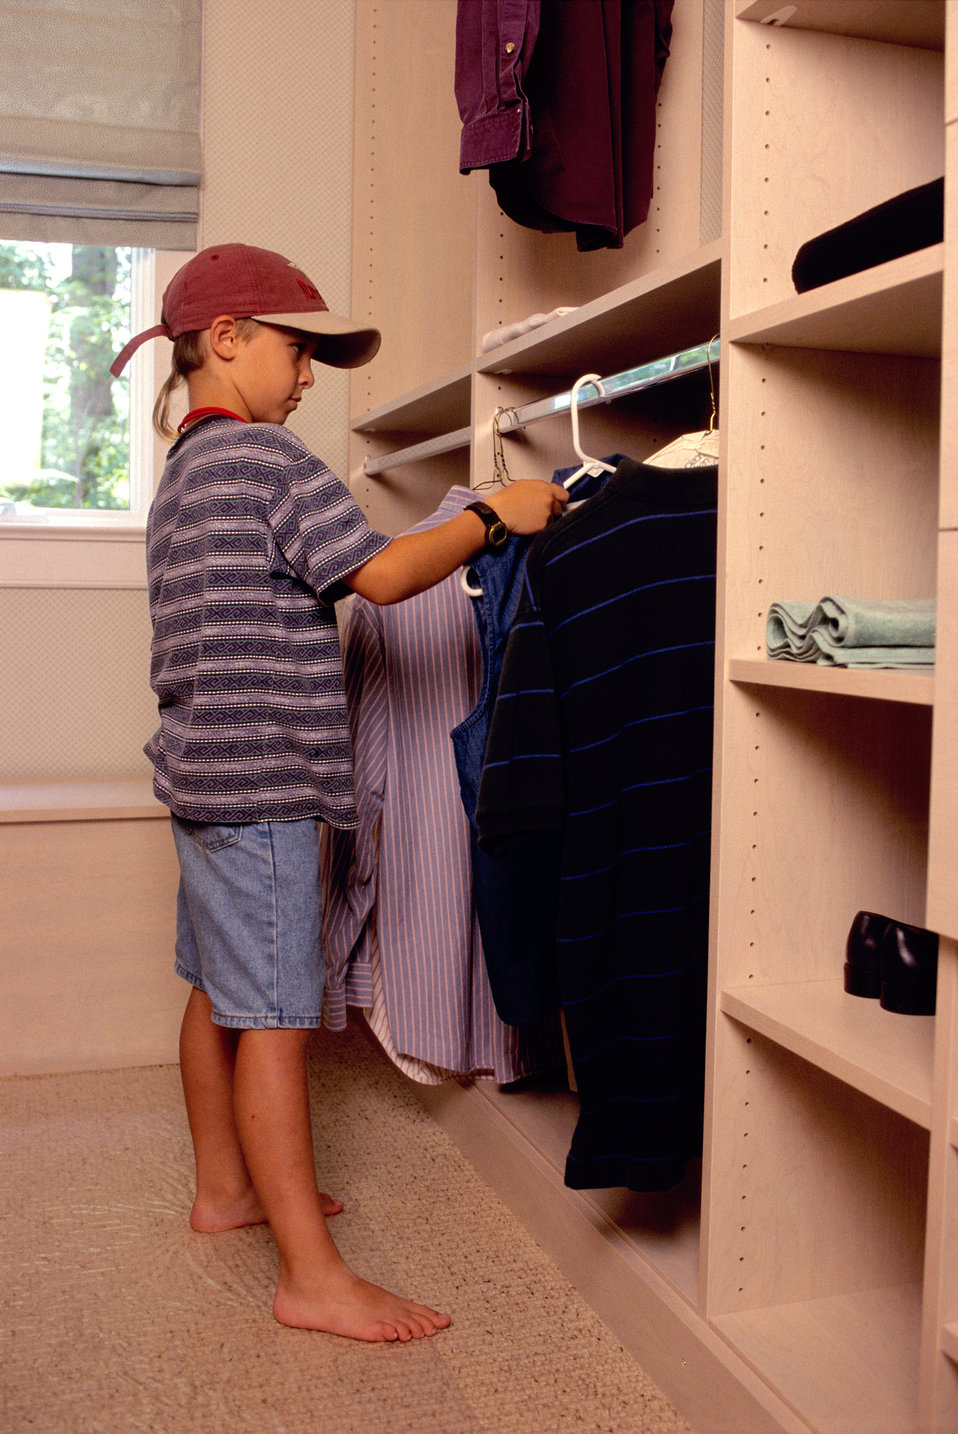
The young boy depicted in this 2000 image was shown either hanging, or removing a shirted clothes hanger, while standing on the carpeted floor of a walk-in closet. The closet was designed to facilitate usage by people who had trouble reaching, were seated in a mobility device, or were of short stature. Demonstrated here was one of the benefits enjoyed by children, which showed how widespread are the concepts of universal design.The Center for Universal Design (CUD) is a national research, information, and technical assistance center that evaluates, develops, and promotes accessible and universal design in housing, buildings, outdoor and urban environments and related products. The Center's work manifests the belief that all new environments and products, to the greatest extent possible, should be usable by everyone regardless of their age, ability, or circumstance.